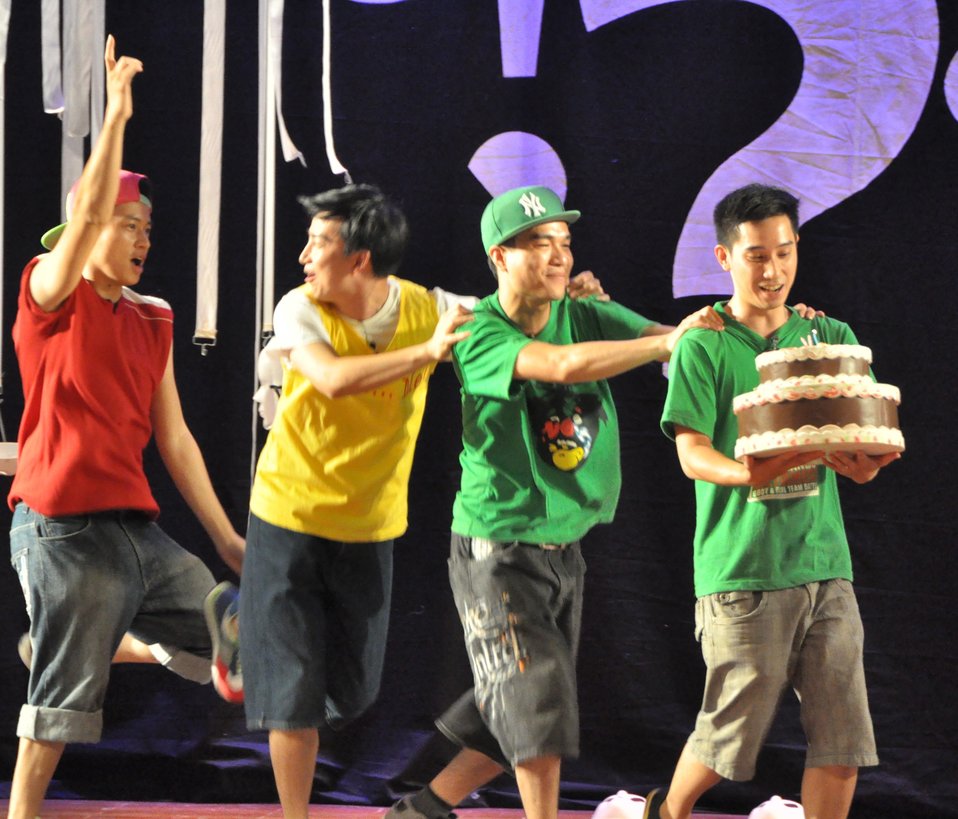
PEPFAR Musical Questions and Exclamations

Hanoi, May 17, 2013